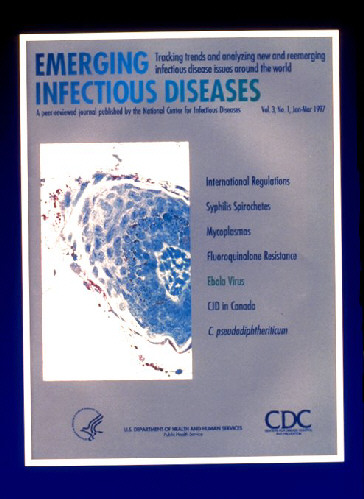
Emerging Infectious Diseases Journal (cover photo)